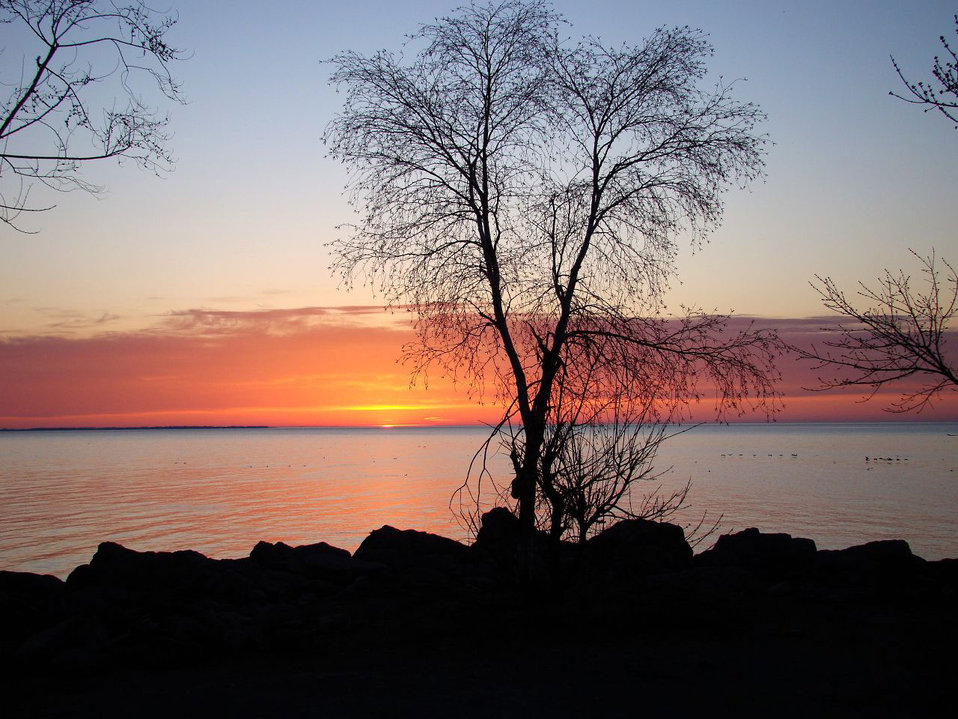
Silence

Lake ontario daybreak.